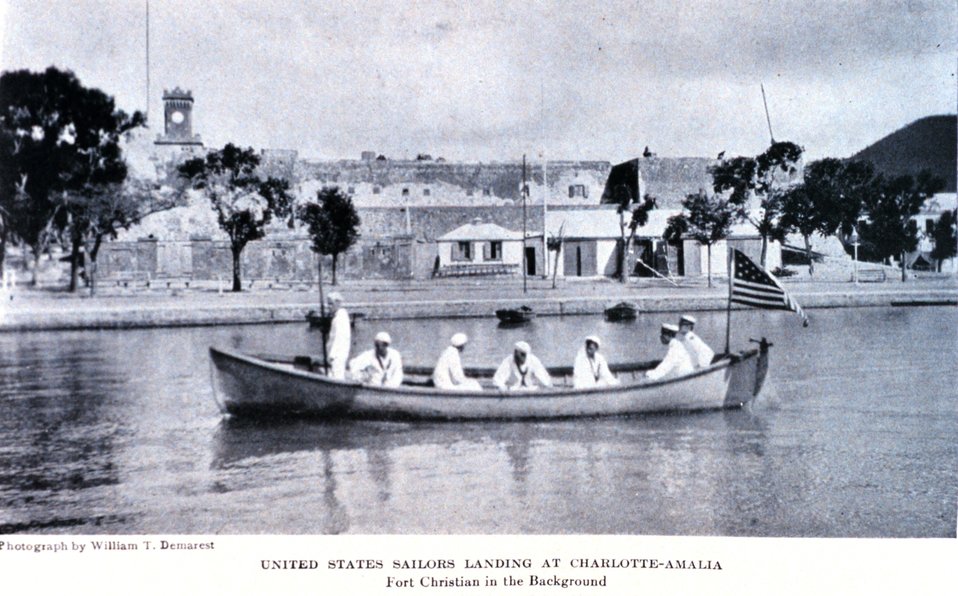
'United States Sailors Landing at Charlotte-Amalia.' In: 'The Virgin Islands Our New Possessions and the British Islands', by Theodoor De Booy and John T. Faris, 1918. J. B. Lippincott and Company, Philadelphia. P. 24. Library Call Number C/hc100 V81 B.